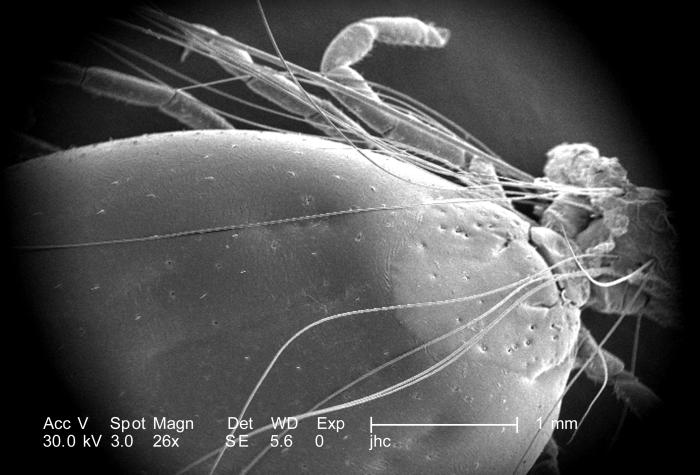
Under a low magnification of 26X, this scanning electron micrographic (SEM) image depicted a dorsal view of an unidentified engorged female tick, which had been extracted from the skin of a pet cat. Note the presence of some of the cat's fur, along with some of its skin tissue in which the tick's gnathosoma was still embedded, while it had been obtaining a blood meal from its feline host. Also worthy of note, is the subtle demarcation of the 'scutum', or chitinous 'shield' on the tick's back, signifying that this was, indeed, a female. Note in PHIL 9959 and 9960, that the entire dorsum of that tick's abdomen is covered by its scutum, categorizing it as a male. In female Ixodid-species ticks, the scutum only partially covers the dorsal abdomen. Ticks belong to the Phylum Arthropoda, due to the fact that they maneuver upon jointed ( 'Arthro') legs ('poda'), as well as the Class Arachnida, for they've eight of these legs, unlike insects, which use six legs to move about.